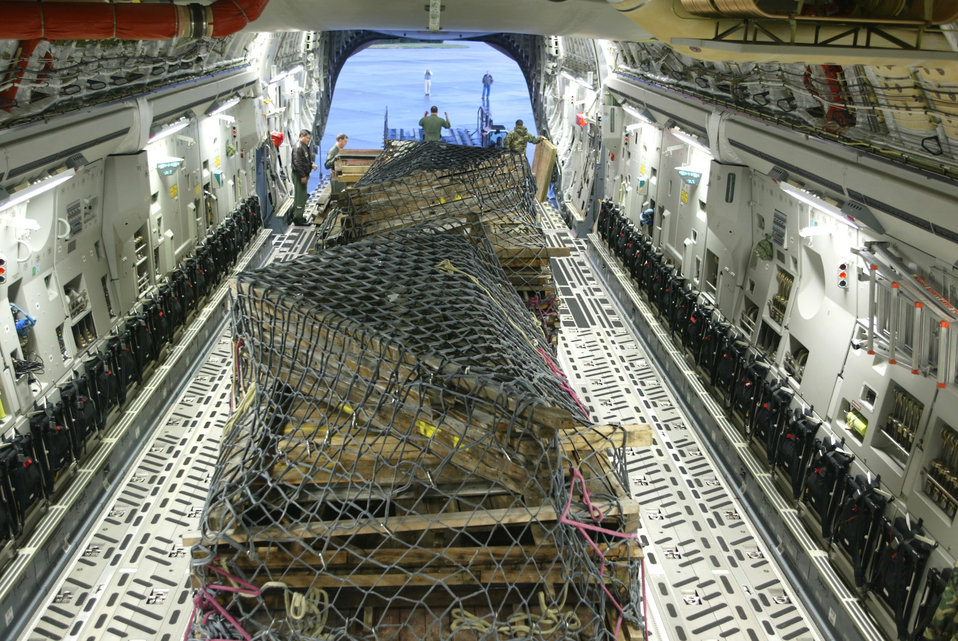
Air Force makes a stable move

DOBBINS AIR RESERVE BASE, Ga. -- Crewmembers prepare to unload the last remaining war stable here, the D-Day home for the 506th Parachute Infantry Regiment, known as the Band of Brothers. The stable, originally located on a farm in south England, was disassembled, palletized and transported to the United States on an Air National Guard C-17 Globemaster III from the 172nd Airlift Wing at Allen C. Thompson Field, Miss. The stable will be transported to Camp Toccoa, Ga., where it will reassembled at a museum there.